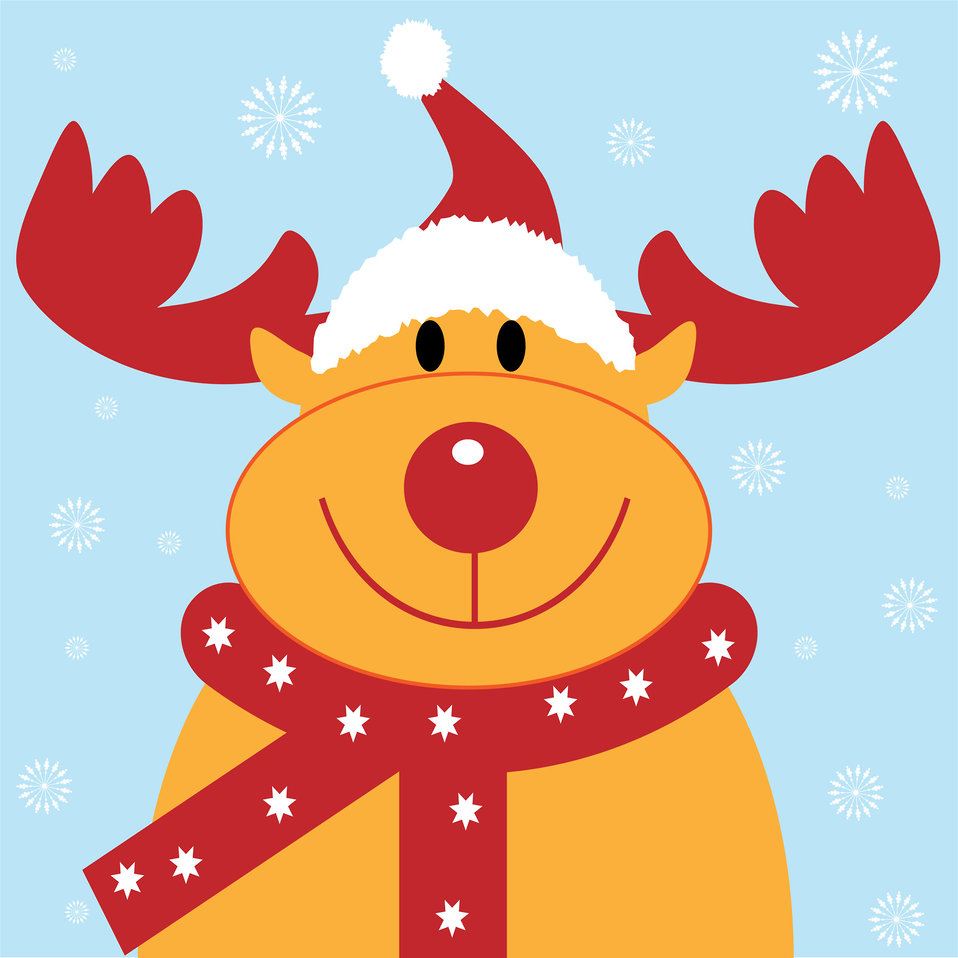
Christmas reindeer cartoon on snowflake pattern background.